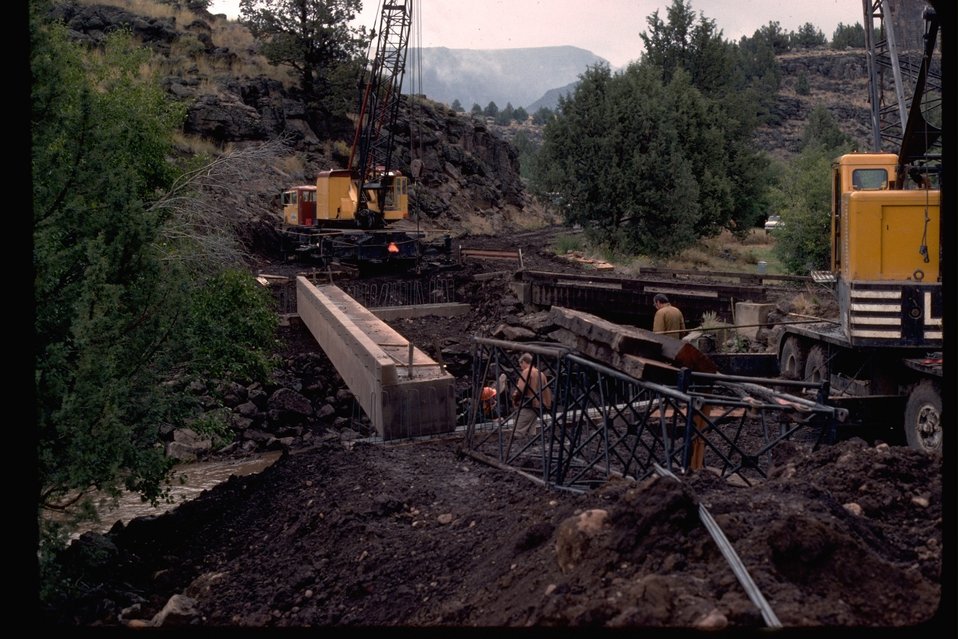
Constructing Blitzen crossing bridge on South Steens Road in the Donner und Blitzen Wilderness Study Area.